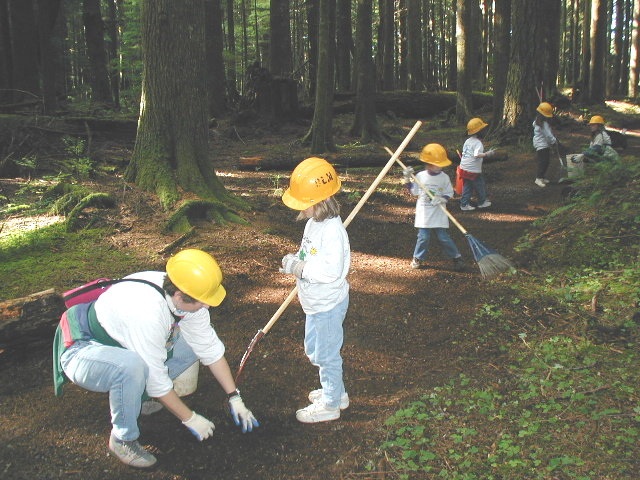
A Brownie troop and parents pitched in to clean and groom a section of trail